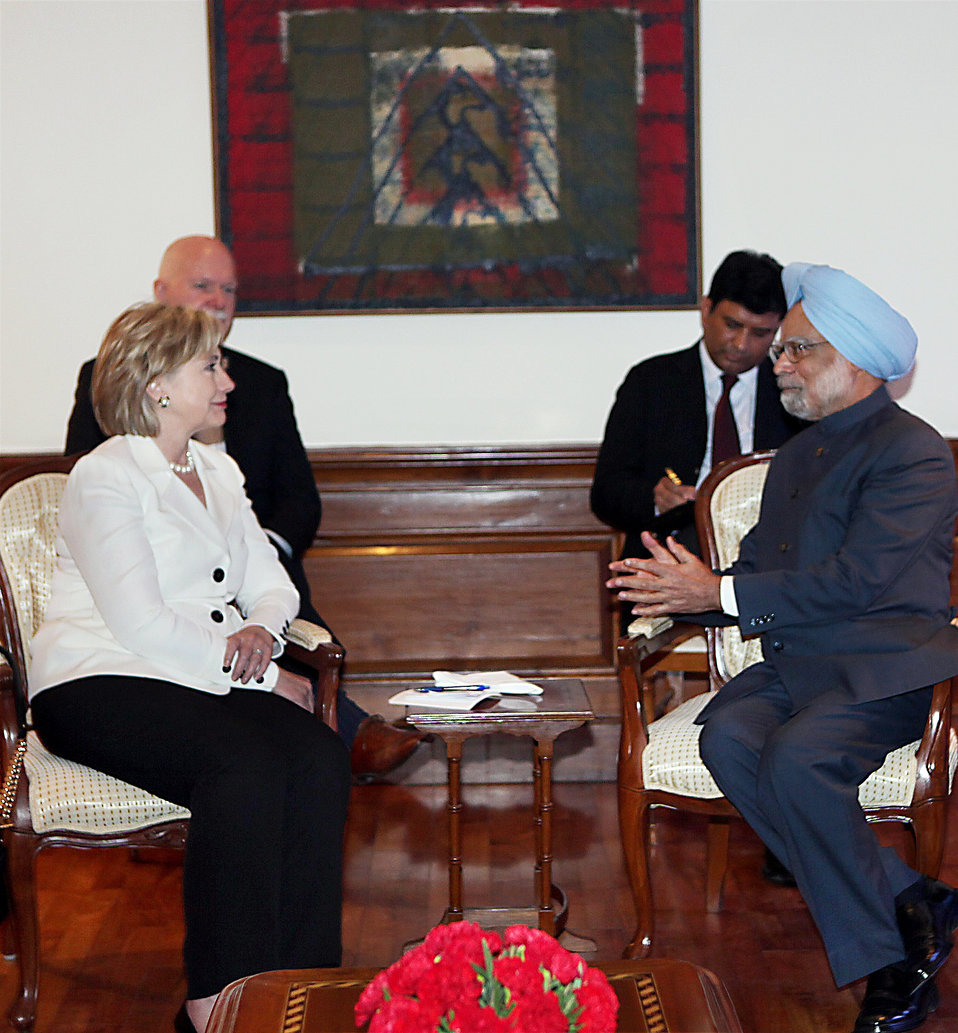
Secretary Clinton Visits Indian Prime Minister

U.S. Secretary of State Hillary Rodham Clinton talks with Indian Prime Minister Manmohan Singh during their meeting in New Delhi, India July 19, 2009.